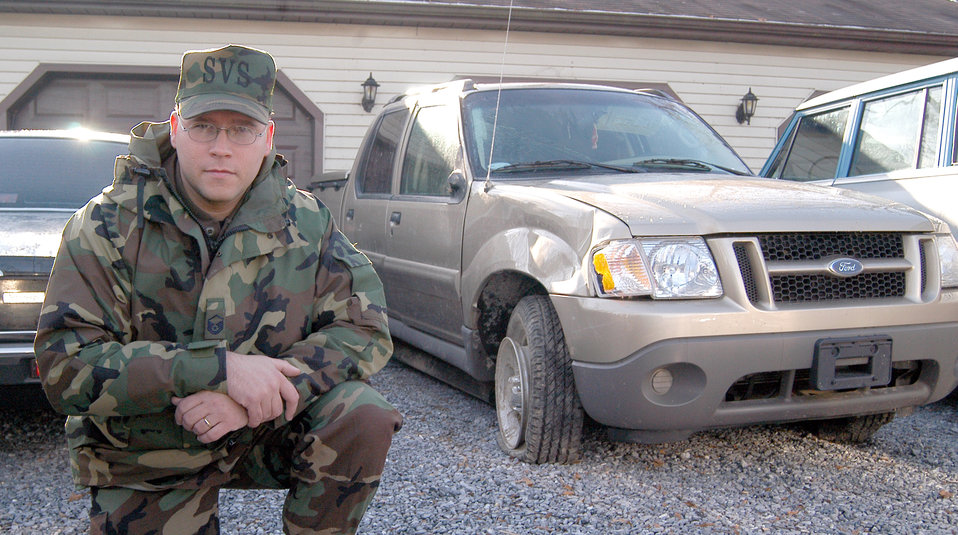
Seatbelts save lives

DOVER AIR FORCE BASE, Del. -- Master Sgt. Thomas Dunlap poses near his wrecked pickup, which rolled over three times in an early morning accident recently. Dunlap, the 436th Services Squadron first sergeant here, said he believes a seatbelt saved his life.